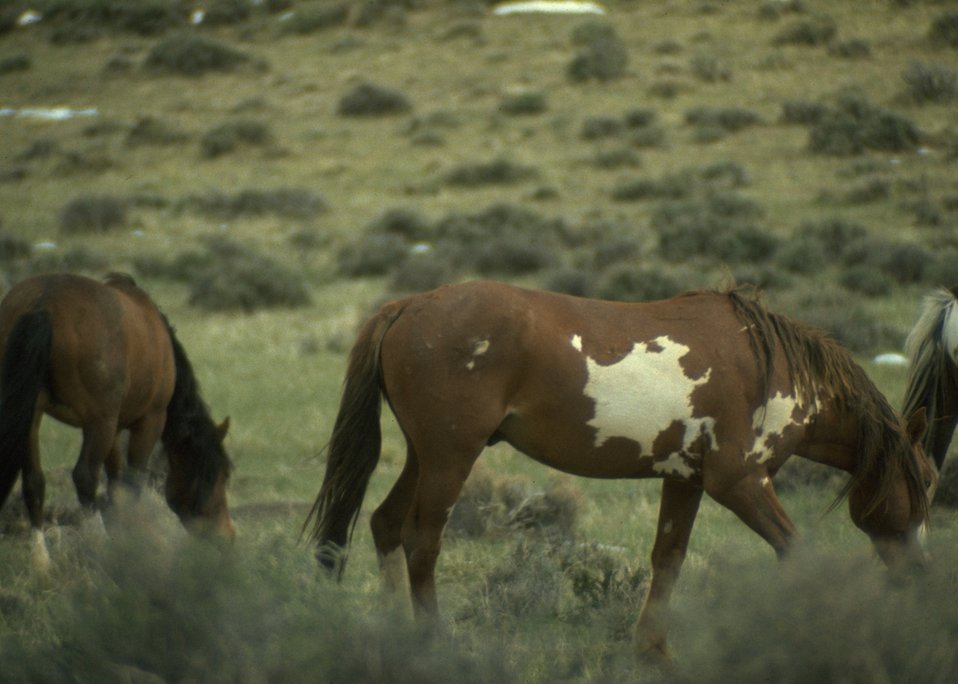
Wild horses.